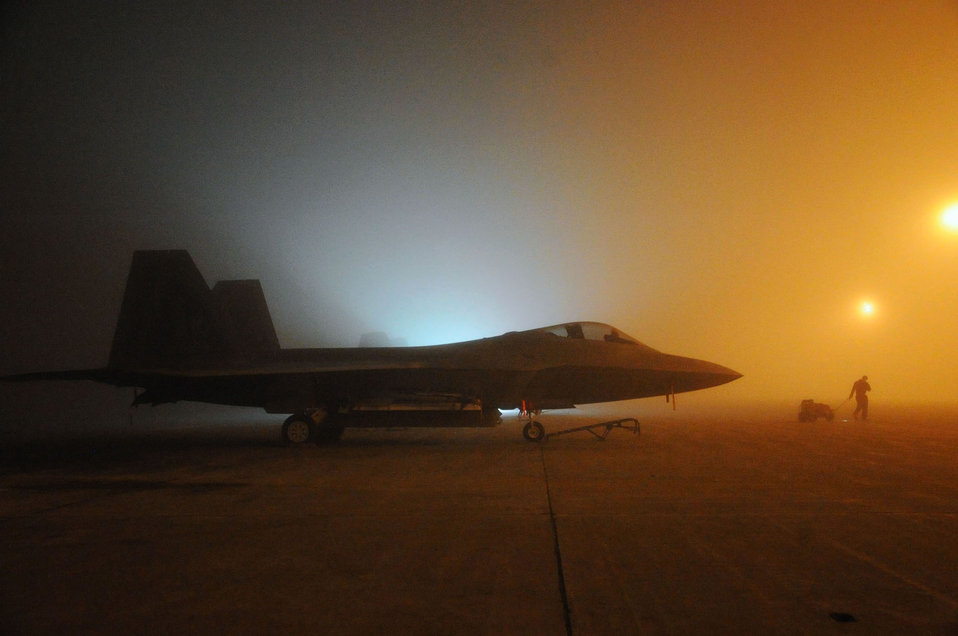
Take the spotlight

A crew chief with the 90th Aircraft Maintenance Unit pulls a hydraulic cart while servicing an F-22 Raptor on the flightline at Joint Base Elmendorf-Richardson, Alaska.